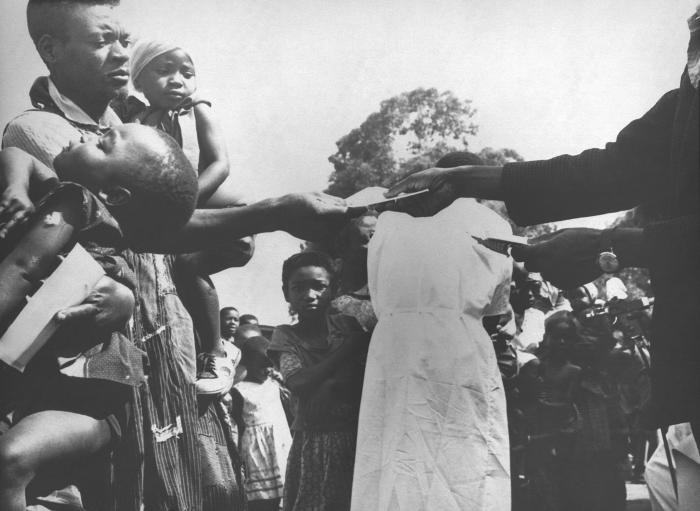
These Nigerian parents brought their children for smallpox vaccinations during the country's 1968 Smallpox Eradication program.